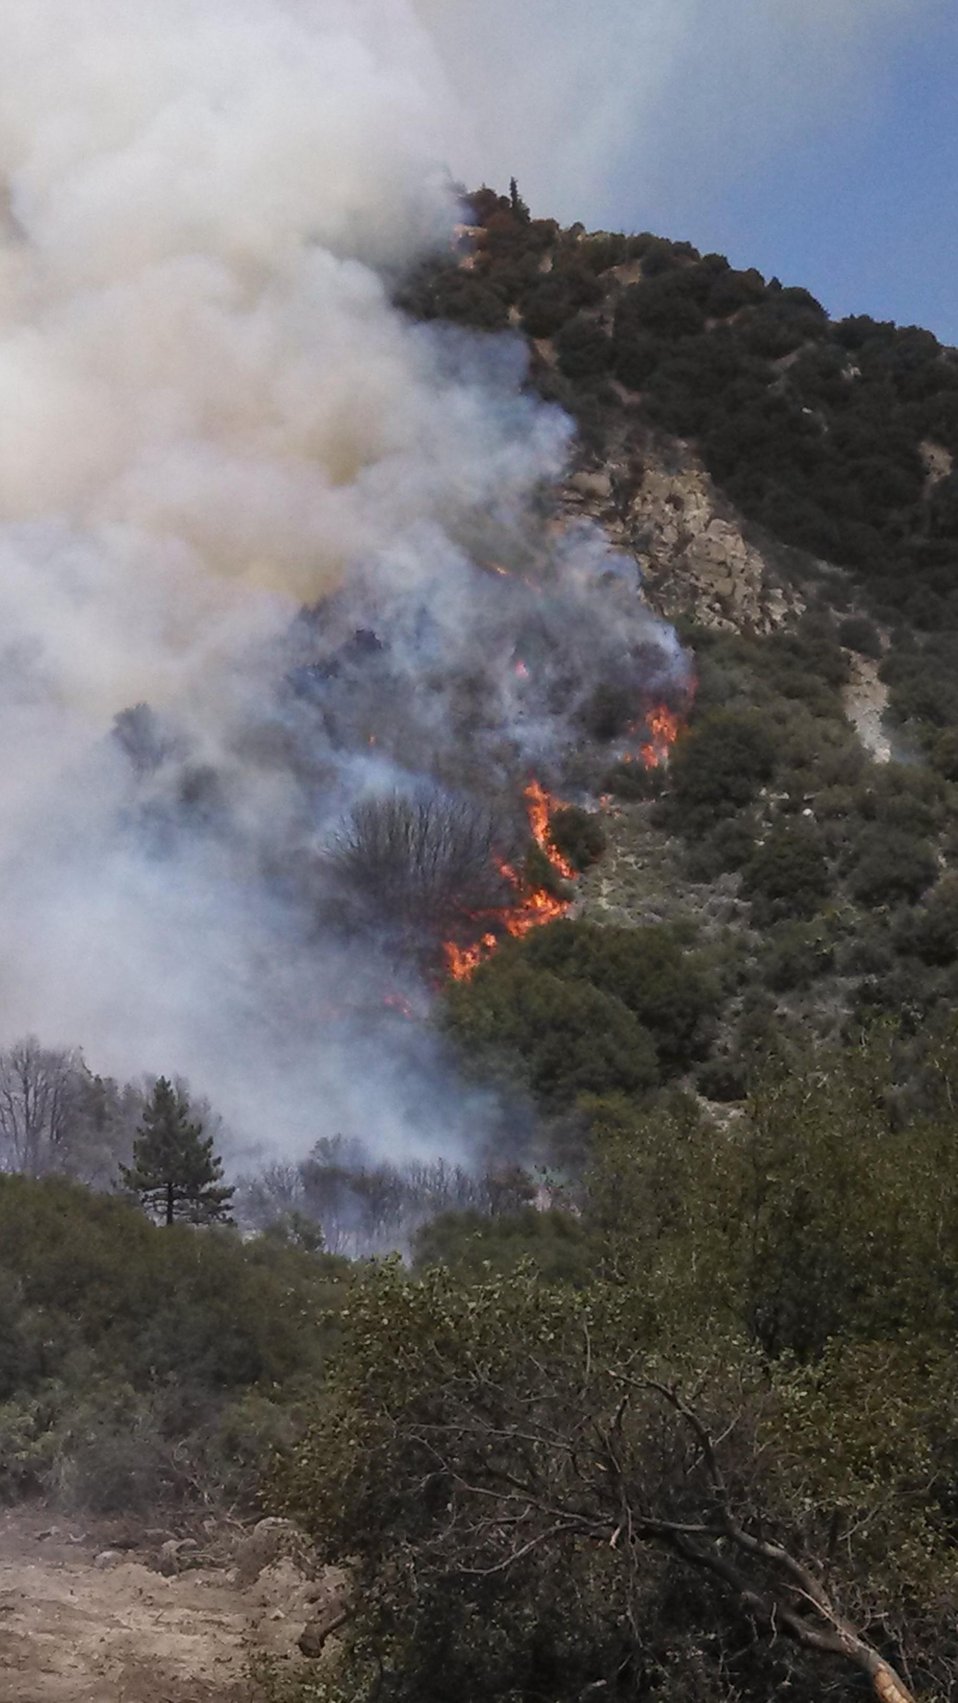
The Hathaway Fire is east of Hathaway Canyon on the northern portion of the Morongo Indian Reservation in the San Gorgonio Wilderness near Palm Springs, CA began on started Jun. 9, 2013 and the cause is still to be determined. The fire has burned approximately 3, 825 acres and is 95% contained as of Jun. 25, 2013.